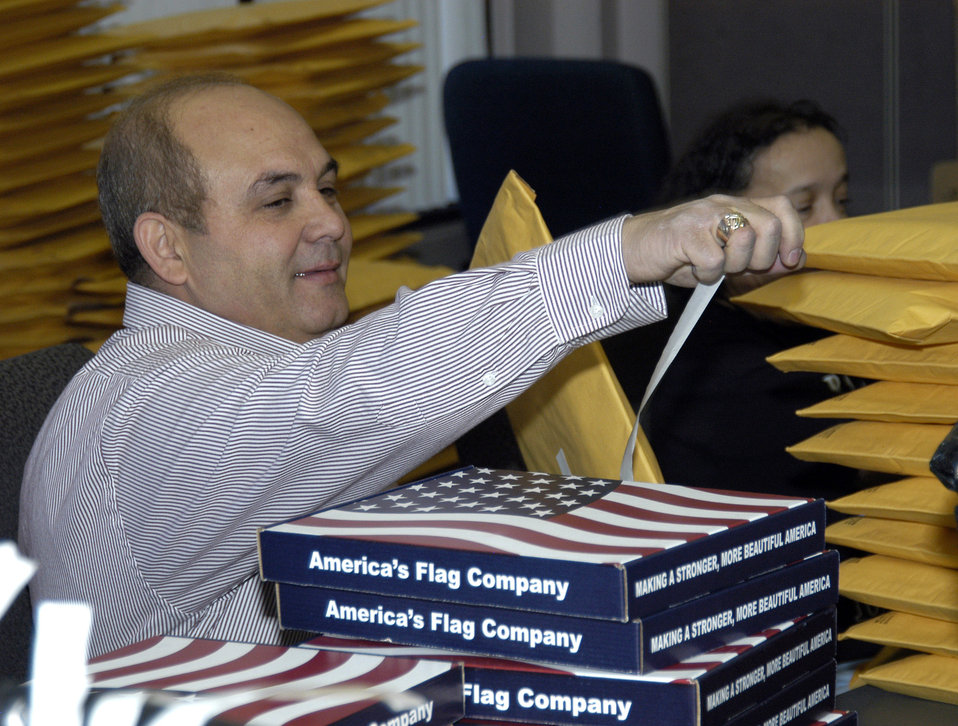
ARPC officials now sending U.S. flags to retiring reservists

Waleed Sharbini prepares to mail a U.S. flag April 4 at the Air Reserve Personnel Center in Denver. Flags are sent to retiring reservists who request one through ARPC's online retirement application.